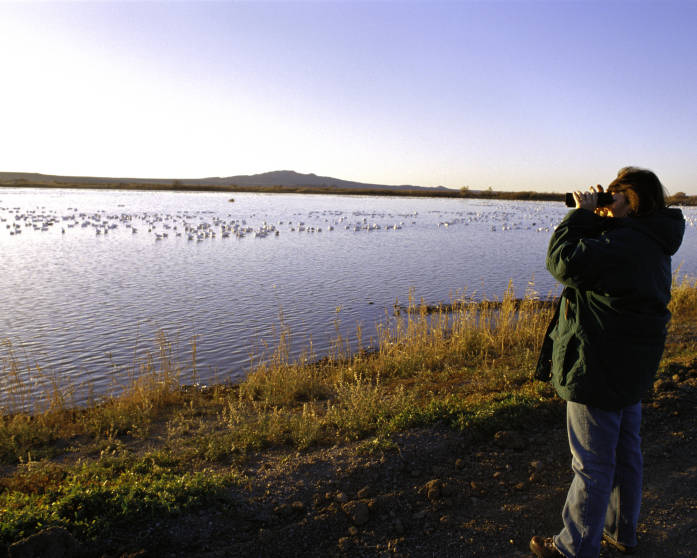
Birdwatching at Bosque del Apache National Wildlife Refuge